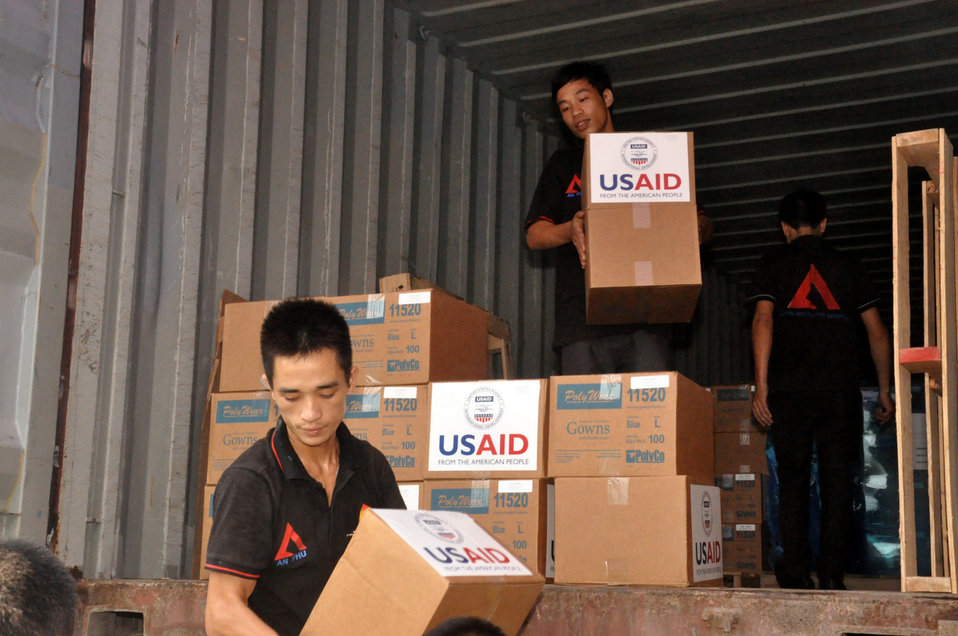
U.S. Provides Protective Gear to Help Prevent Disease Outbreaks